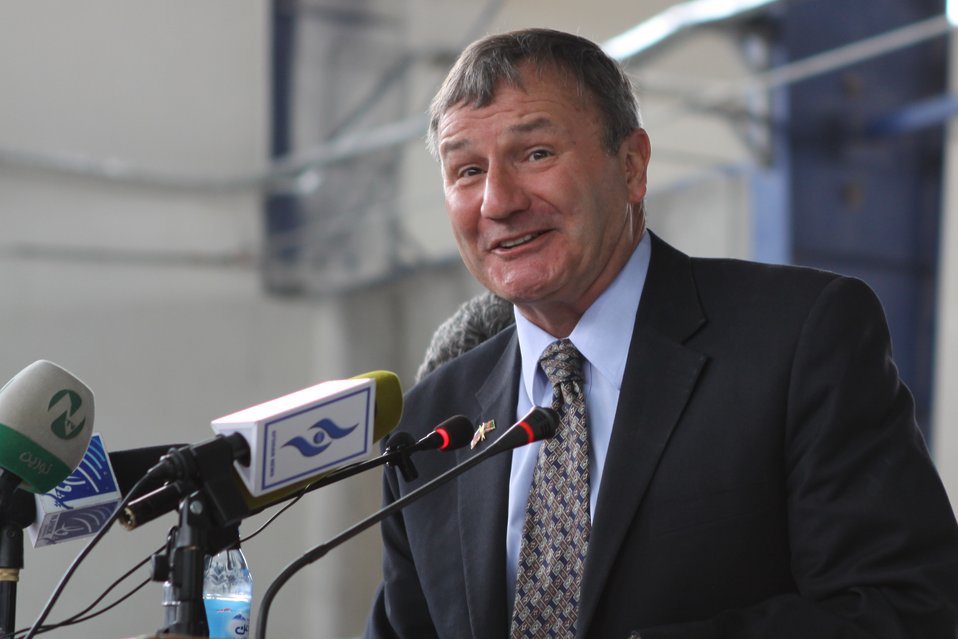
100525 Hirat Marble Conference 208